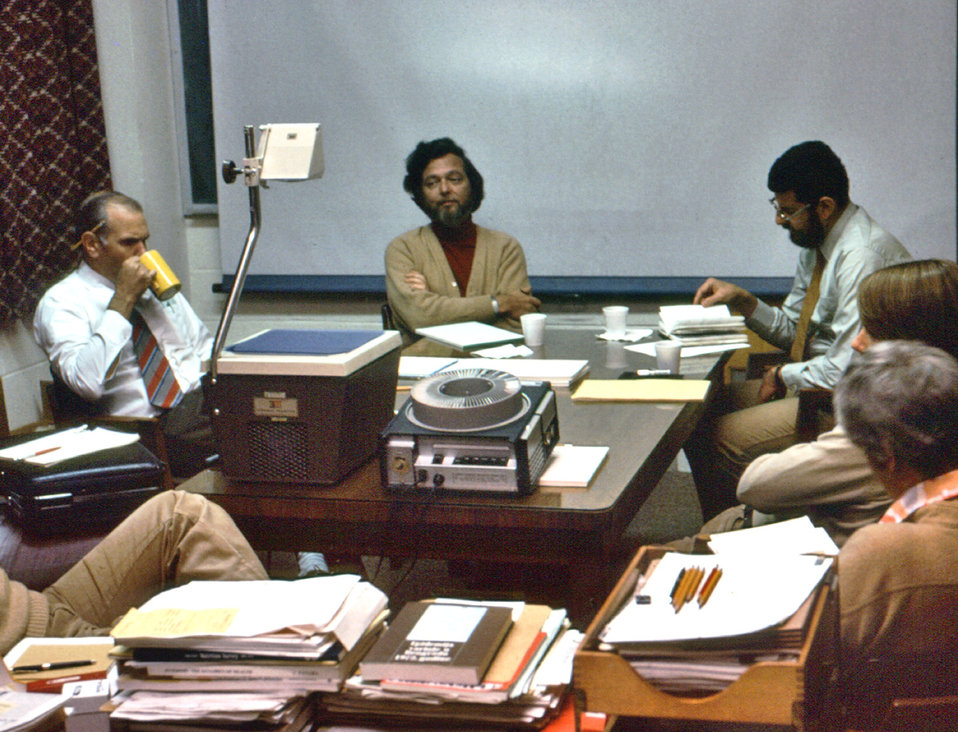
This photograph was taken somewhere in the U.S. during a debriefing held by the Ebola task force after the Zaire outbreak of 1976. Among the members identified are CDC's Dr. Karl M. Johnson, (center) and Dr. Joel Breman (right).